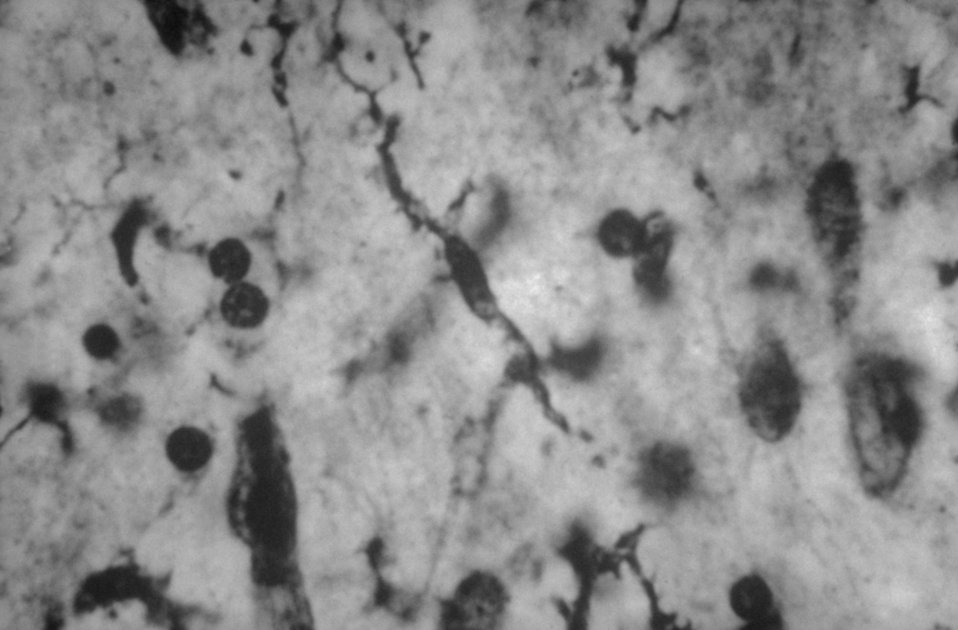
Elongated microglia (rod cells) due to untreated syphilis leading to general paresis known as Paretic Neurosyphilis.